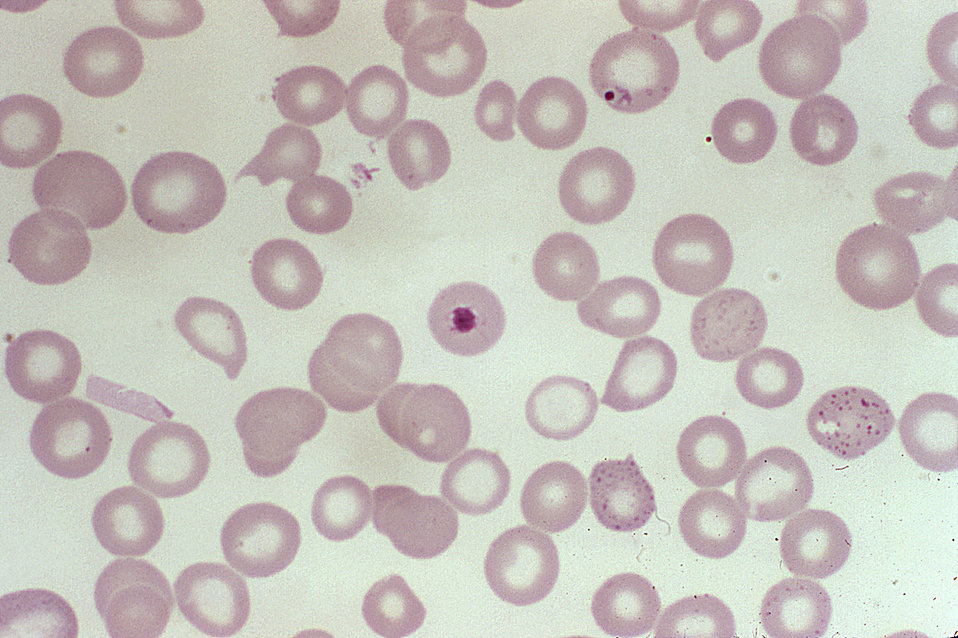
This photomicrograph of a blood smear shows a Plasmodium falciparum parasite in the ring stage of development.